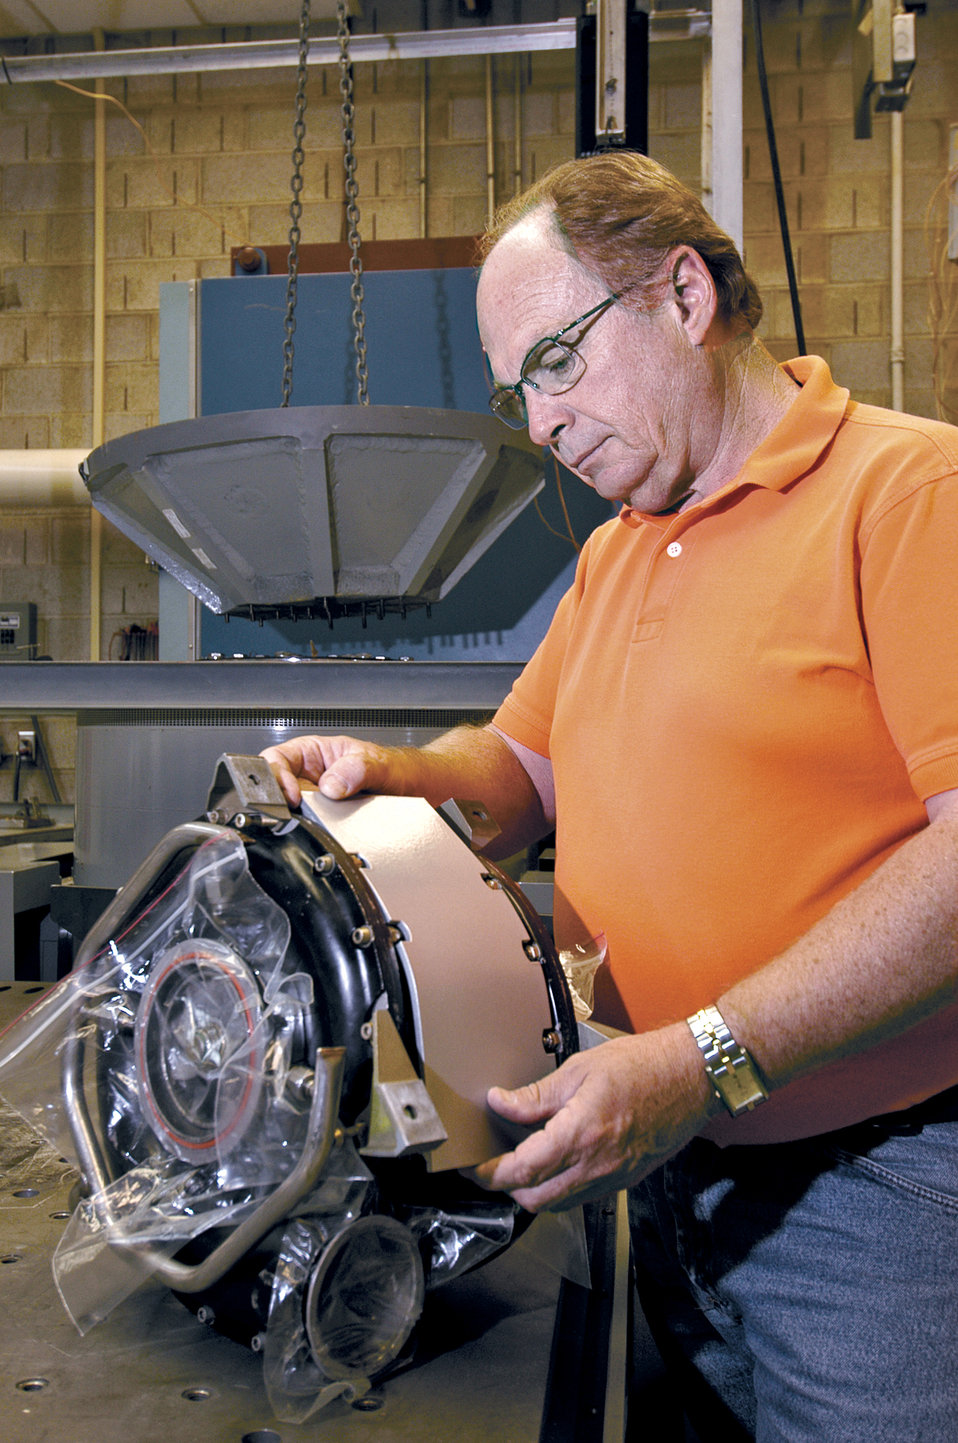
Lab uses vibration testing to solve aircraft problems

TINKER AIR FORCE BASE, Okla. -- Bill Fleenor examines a KC-135 Stratotanker air cycle machine with a new metal scatter shield that he will test in the vibration test facility here where he works as a mechanical engineer. Once attached to a specially made mount, the part will be subjected to extreme vibration conditions similar to those during flight.